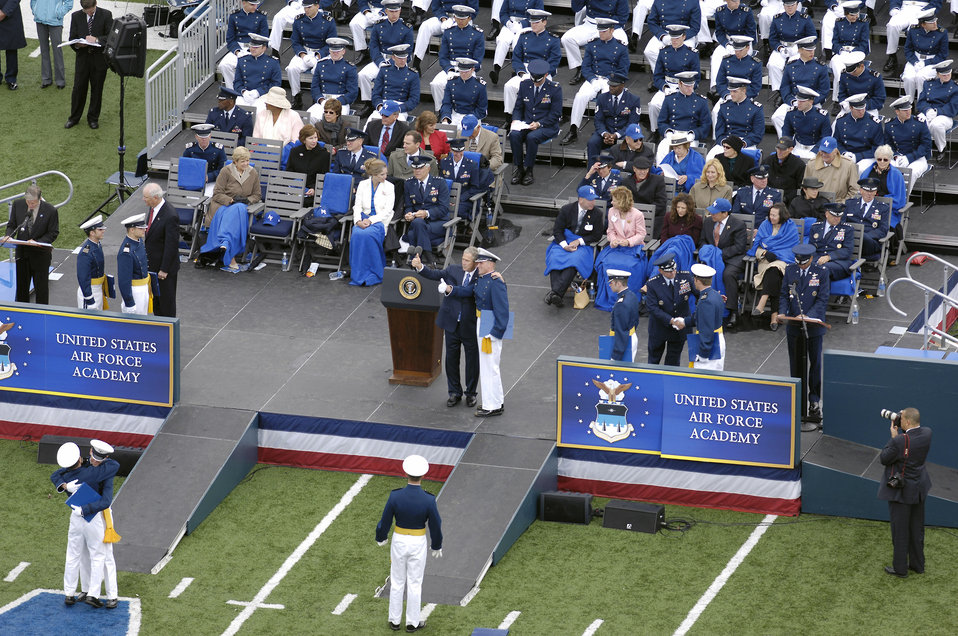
President speaks at Air Force Academy graduation

President George W. Bush, Secretary of the Air Force Michael Wynne and Air Force Chief of Staff Gen. T. Michael Moseley participate in the U.S. Air Force Academy graduation at Falcon Stadium May 28. The Class of 2008, the 50th Academy class, graduated 1,012 cadets who will enter the Air Force as second lieutenants.